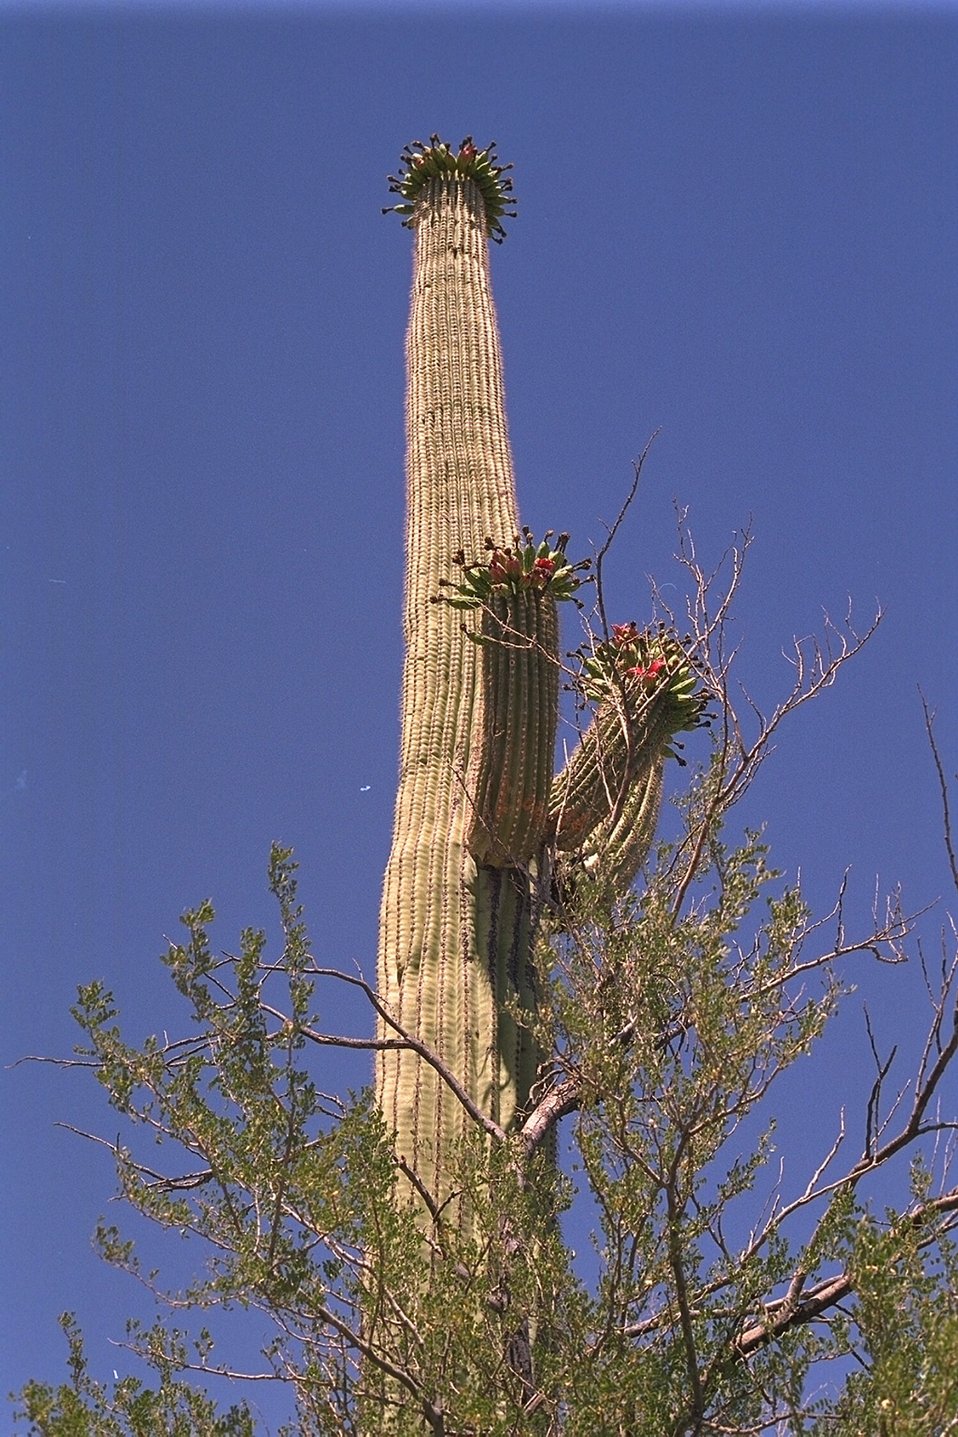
A perspective shot of a Cactus in bloom against the blue sky in the Iornwood Forest Naitonal Monument.